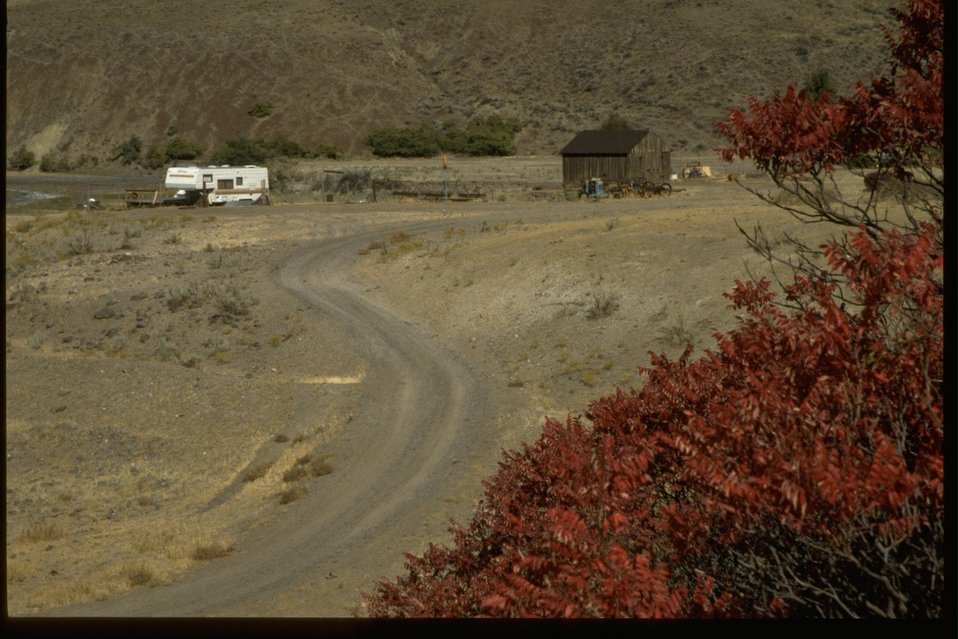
Private buildings along the John Day River near 30 Mile WSA. (1in a series of 3)